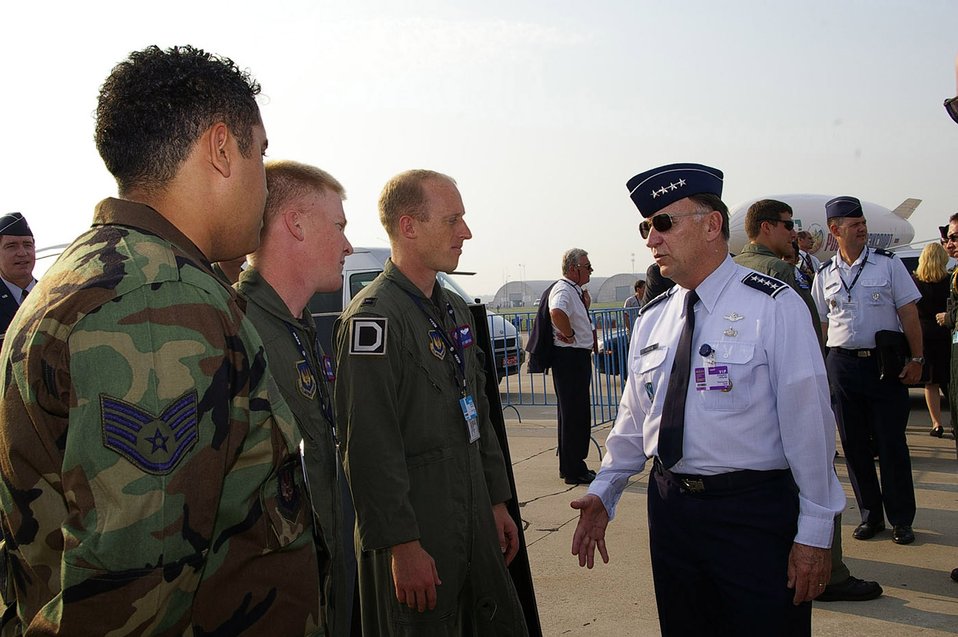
Mildenhall Airmen showcase Air Force in Russia

Gen. William T. Hobbins speaks with Staff Sgt. Kevin Jones, Senior Airman Travis Swinson and Capt. Scott Montier during the first day of the Moscow International Air Show Aug. 21 at Ramenskoye Airfield in Zhukovsky, Russia. General Hobbins, commander of U.S. Air Forces in Europe, visited the air show and met with Airmen from his command. The Airmen are from the 100th Air Refueling Wing at Royal Air Force Mildenhall, England.